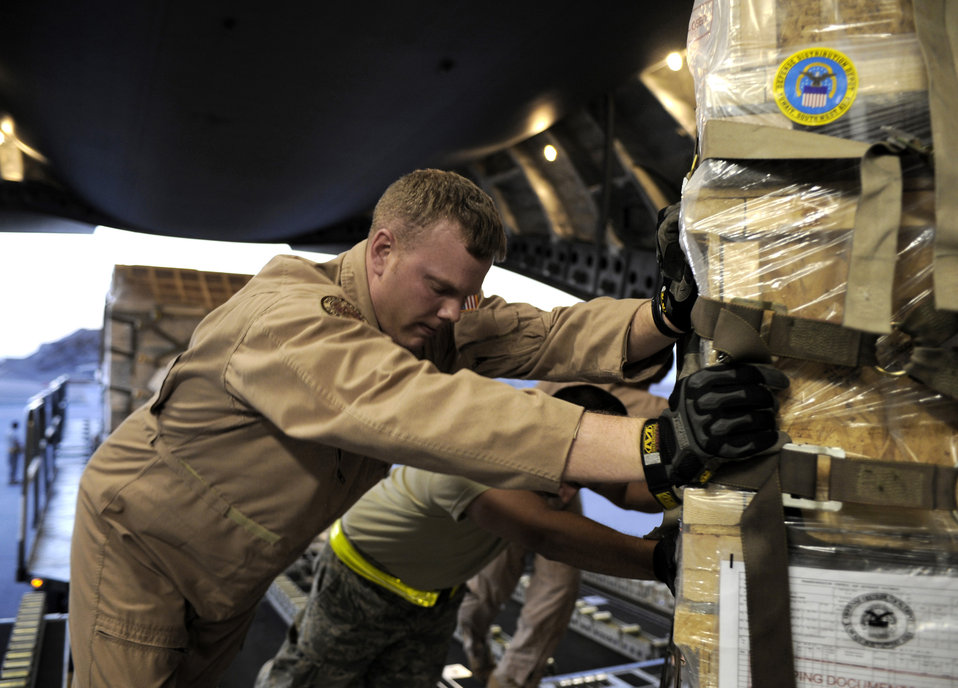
U.S. airlift aids Pakistan's war-torn Swat Valley

Tech. Sgt. Matt Pease loads a pallet containing humanitarian relief supplies destined for Pakistan into the cargo bay of a C-17 Globemaster III May 20 at an undisclosed location in Southwest Asia. Sergeant Pease is a Raven assigned to the 816th Expeditionary Airlift Squadron.